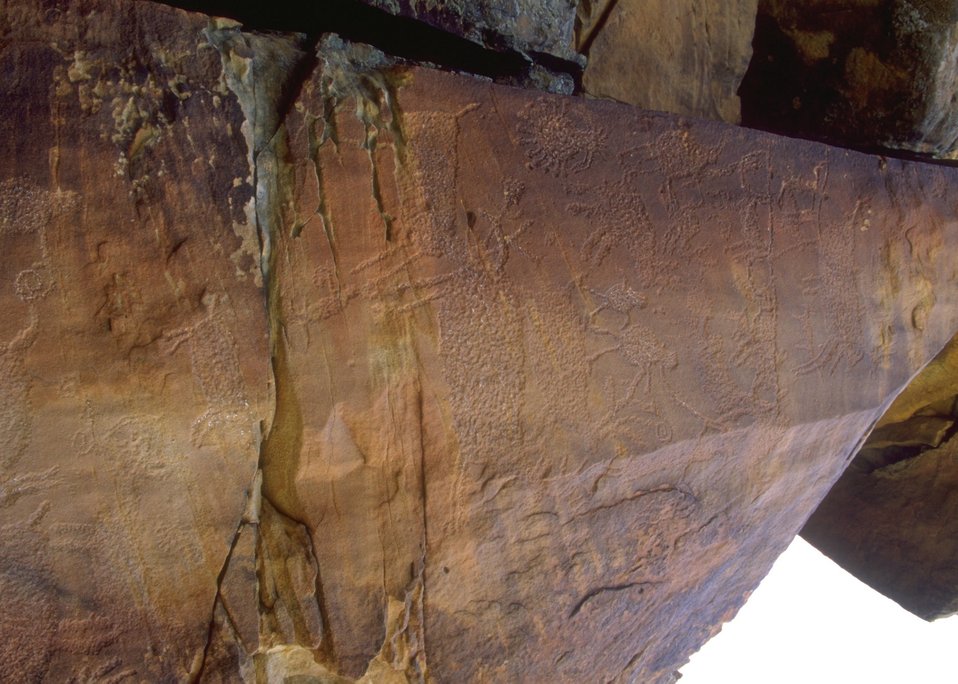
Petroglyph panel in Whoopup Canyon, Newcastle Field Office.